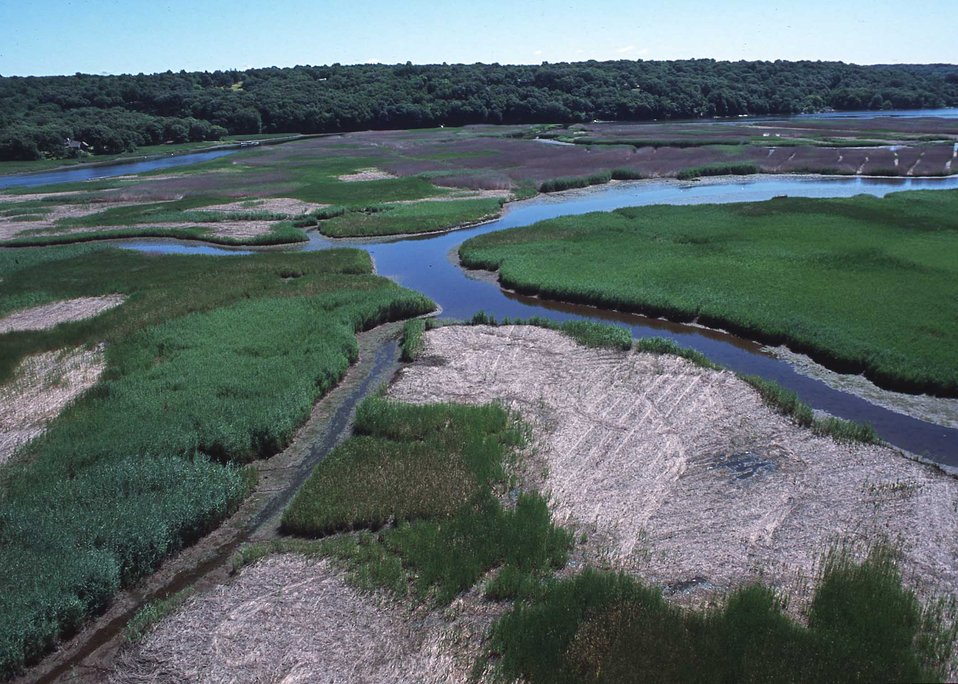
Connecticut River tideland habitat undergoing invasive plant control (light colored areas) and native plant community restoration.